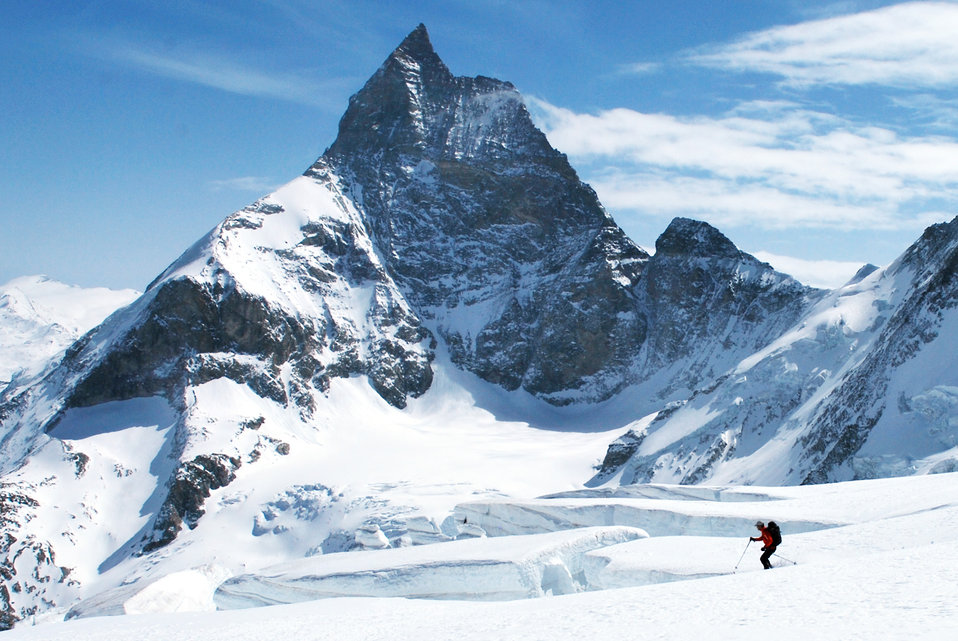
Alpine pararescuemen train for mountain rescues

Senior Airman Nathan Simonson skis below the Matterhorn peak April 7, 2010. Matterhorn is a peak within the Alps reaching 14,689 feet. Airman Simonson, along with six of his fellow pararescuemen and a guide, were following the Haute Route from Chamonix, France to Zermatt, Switzerland, while practicing their mountain rescue techniques. Airman Simonson is a pararescueman with the 56th Rescue Squadron at RAF Lakenheath England.